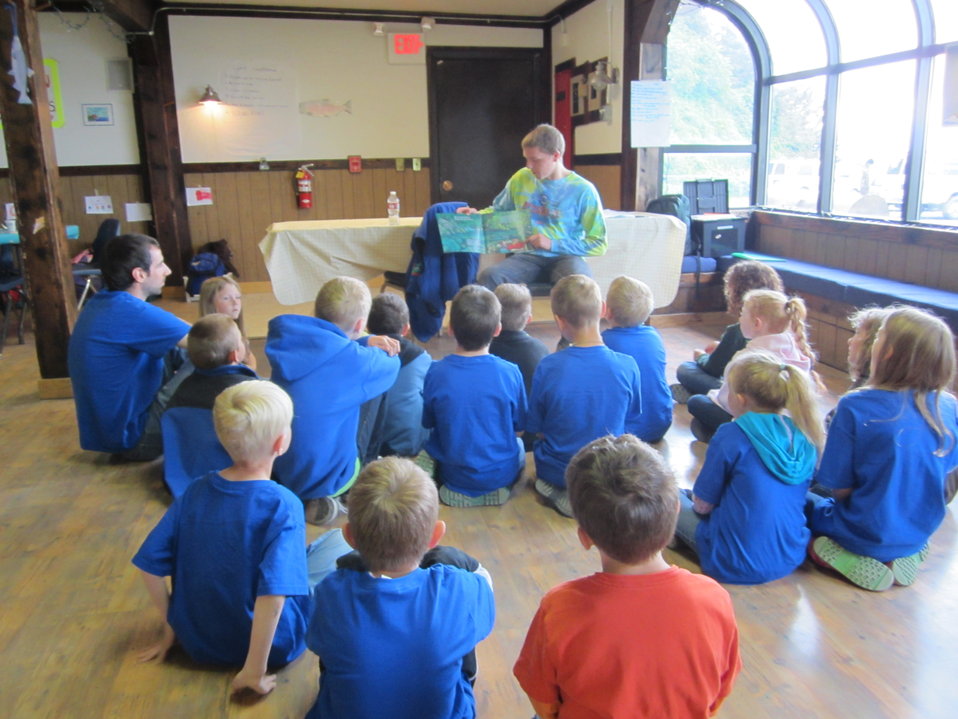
Volunteer reads to Salmon Campers

Photo Credit: USFWS
Source: Kodiak NWR
Kodiak Refuge hosts a youth leadership program for volunteers 7th-12th grade to assist our staff as instructor aides for our annual science camp.